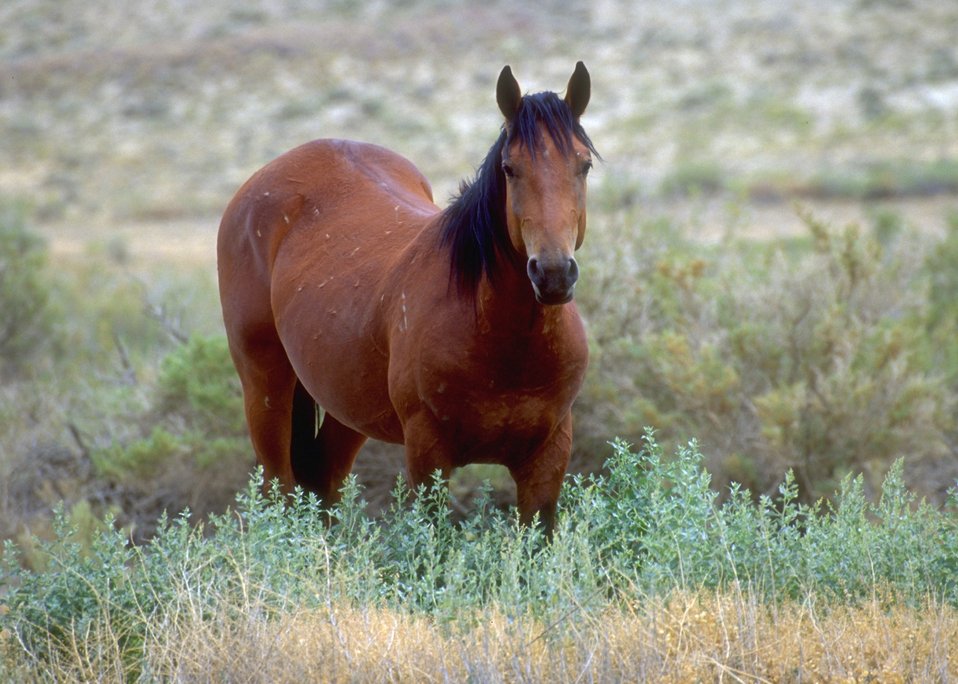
Wild horses, Rock Springs Field Office.